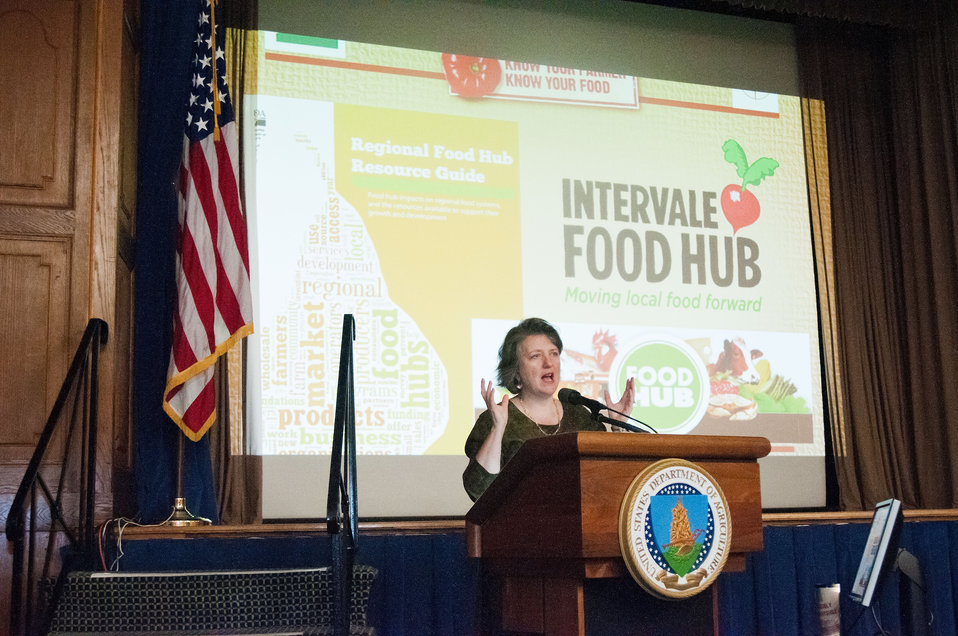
Agriculture Deputy Secretary Dr. Kathleen Merrigan explains the Know Your Farmer Know Your Food (KYF2) Compass to U.S. Department of Agriculture (USDA) interns in Washington, D.C. on Thursday, July 26, 2012. KYF2 is a USDA wide interagency initiative to promote and identify ways to improve the administration and implementation of programs and supports farms and businesses involved in regional food networks to strengthen the connection between farmers and consumers, including improving rural economies, promoting job growth and increasing access to healthy food in America. Food hubs impact regional food systems and the resources available to support their growth and development.